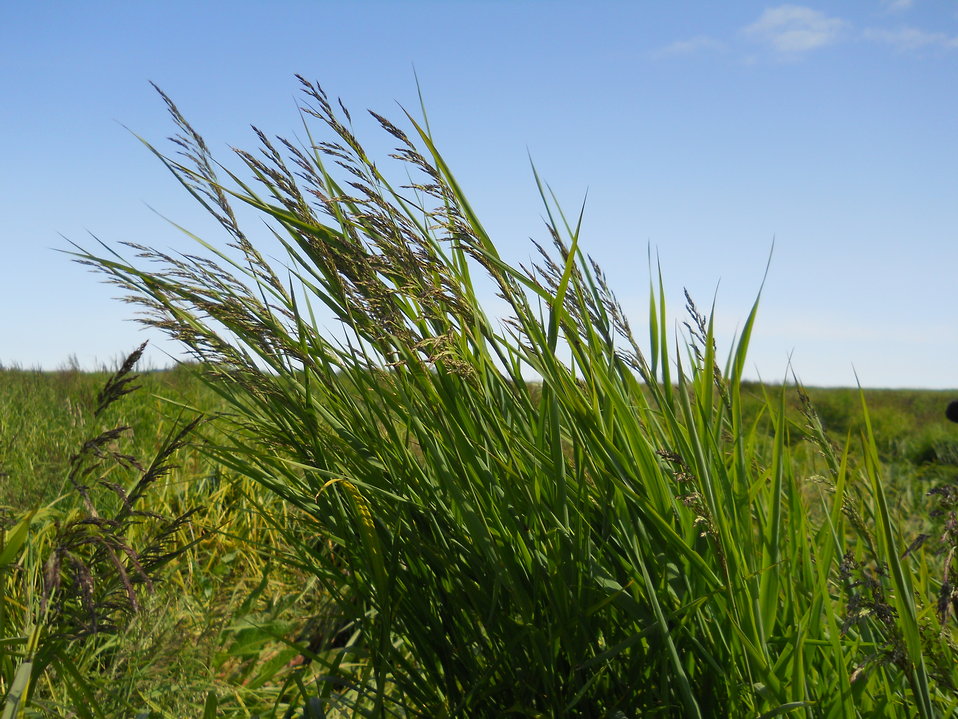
Windblown Grass

Credit: USFWS
Photo taken by a Salmon Camp participant during a nature photography activity.

Source and Contact: Kodiak National Wildlife Refuge